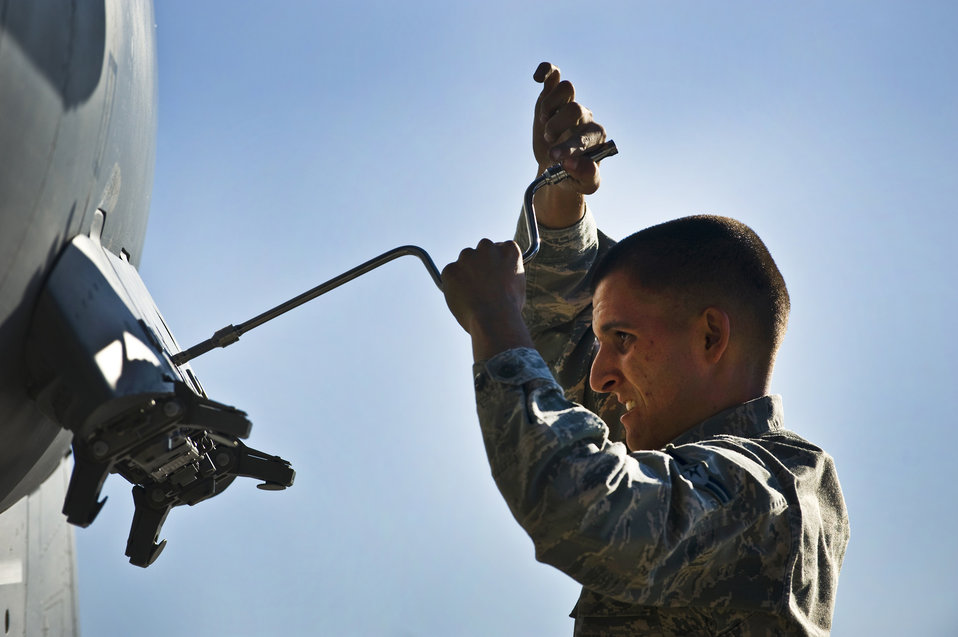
Training for battle

Airman 1st Class Earl Condra prepares an F-15 Eagle for ordnance mounting July 22, 2011, during a weapons load crew competition at Nellis Air Force Base, Nev. Weapons load crew competitions are conducted quarterly to keep Airmen sharp and recognize superior performers. Condra is an aircraft armament systems apprentice assigned to the 757th Aircraft Maintenance Squadron.